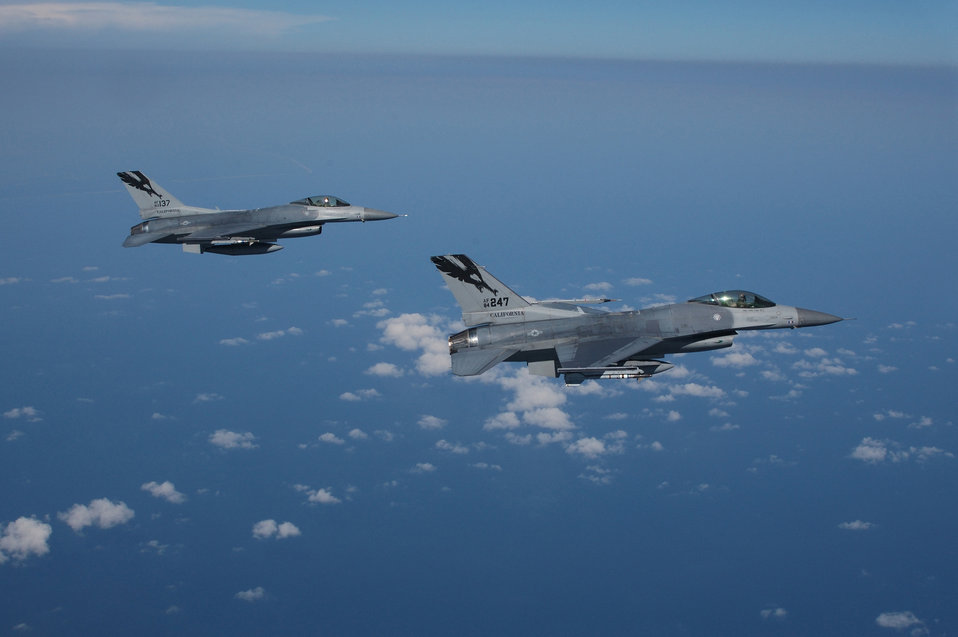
California Falcons

OVER THE GULF OF MEXICO -- A pair of F-16 Fighting Falcons fly during a sortie for the weapons systems evaluation program at Tyndall Air Force Base, Fla., on May 18. The F-16s are assigned to the California Air National Guard's 144th Fighter Wing.